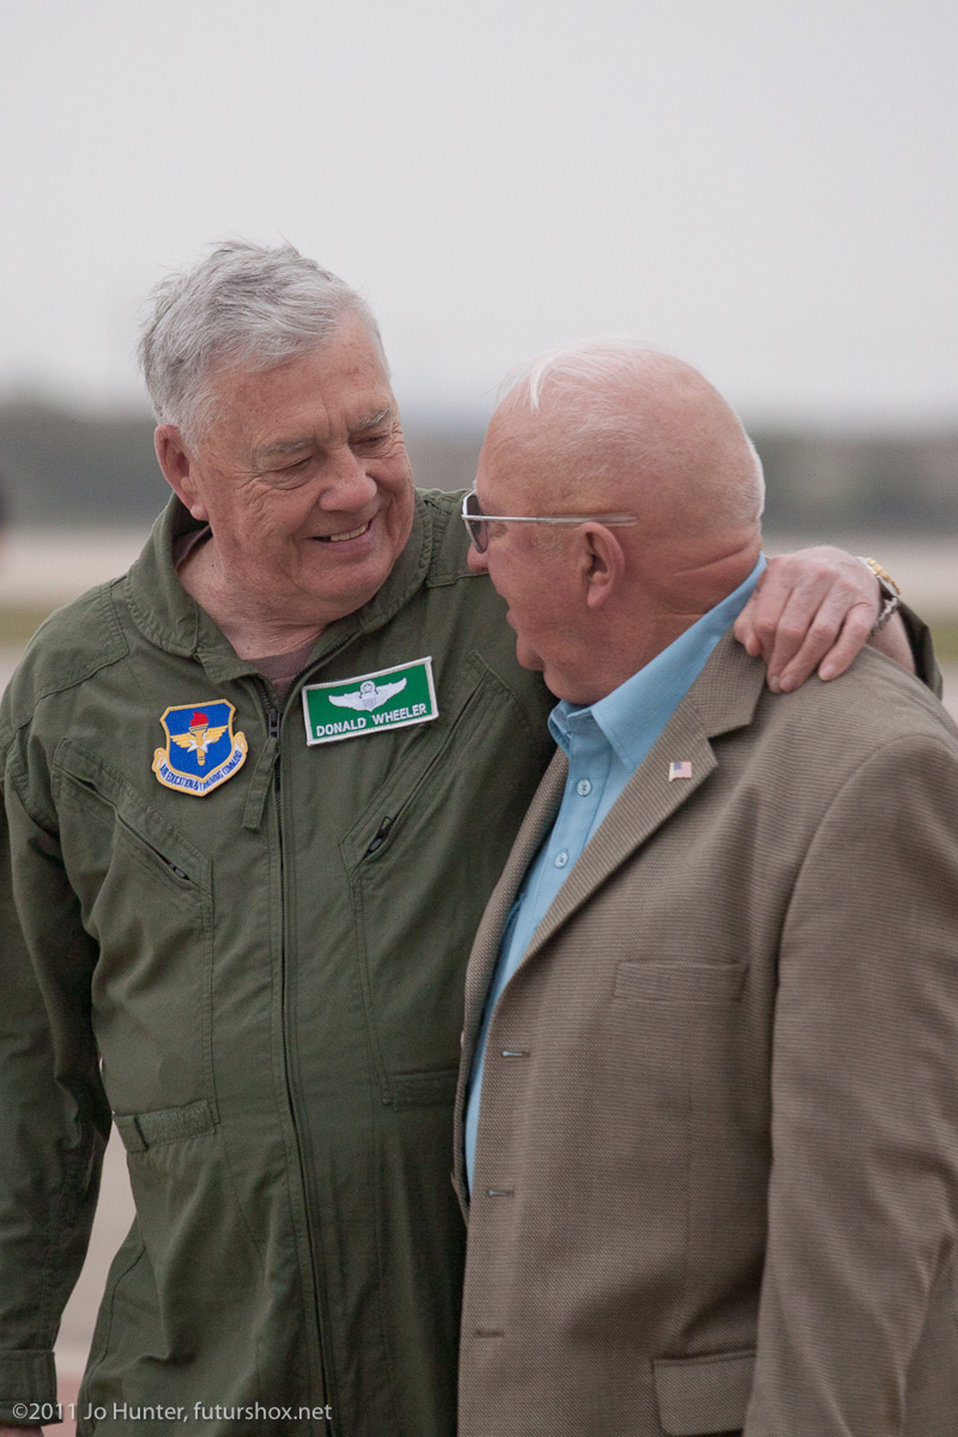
T-38

Retired Lt. Col. Donald Wheeler (left) greets retired Col. James Gibler March 17, 2011, at Randolph Air Force Base, Texas. Colonel Wheeler was a member of the first class of pilots to train on the T-38 Talon. He graduated in 1962. Colonel Gibler was Colonel Wheeler's T-38 instructor. The two men had not seen each other for 49 years.